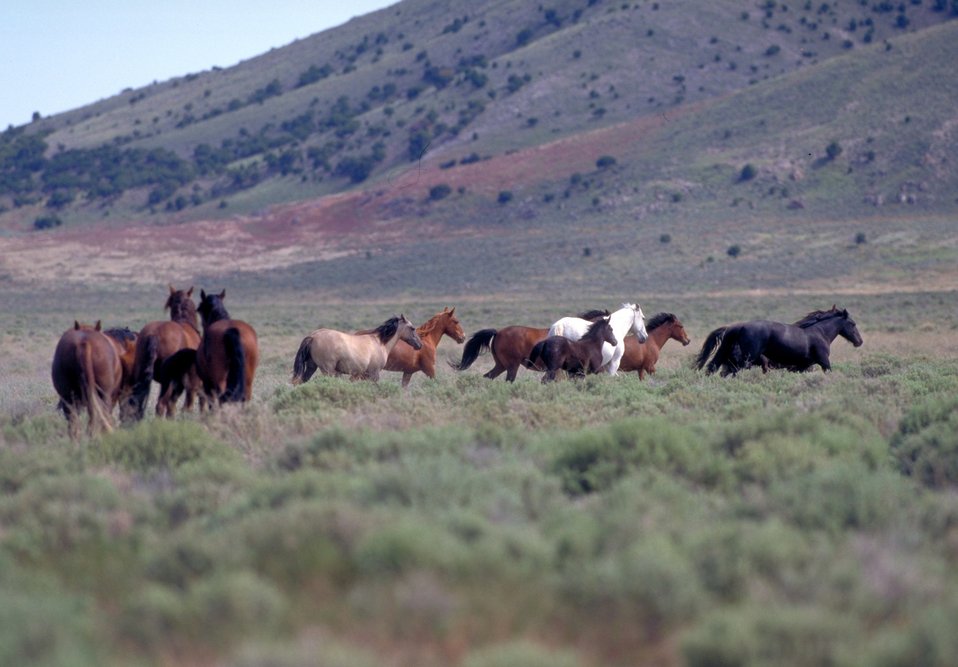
Onaqui Herd near Dugway, Utah.